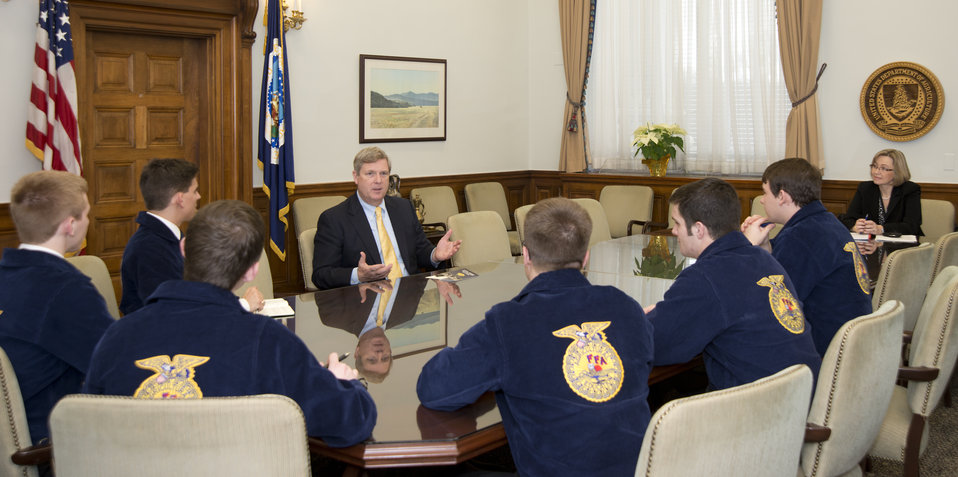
Agriculture Secretary Tom Vilsack meets with National FFA officers at the U.S. Department of Agriculture (USDA), Whitten Building in Washington, DC, on Wednesday, Jan.15, 2014. (L to R Secretary Mitch Baker, Eastern Region Vice President Wes Davis, President Brian Walsh, Central Region Vice President Steven Brockshus, Western Region Vice President Jason Wetzler, and Southern Region Vice President Jackson Harris).